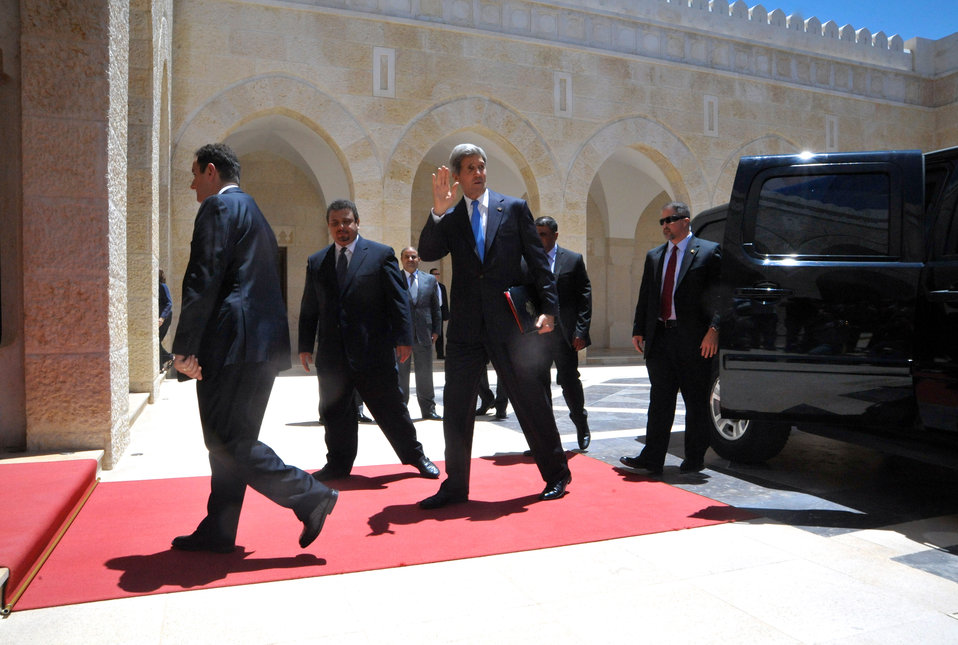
Secretary Kerry Arrives for his Lunch With King Abdullah II

U.S. Secretary of State John Kerry arrives at Al-Hummar Palace in Amman, Jordan, to meet with King Abdullah II on June 27, 2013.